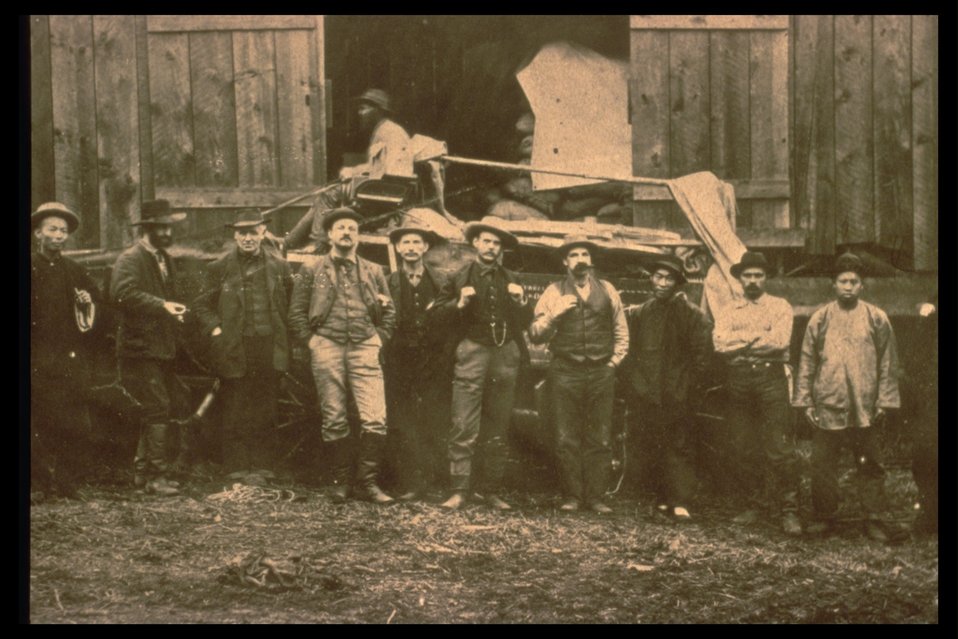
Black and White phot of a group of millor rail workers posing.